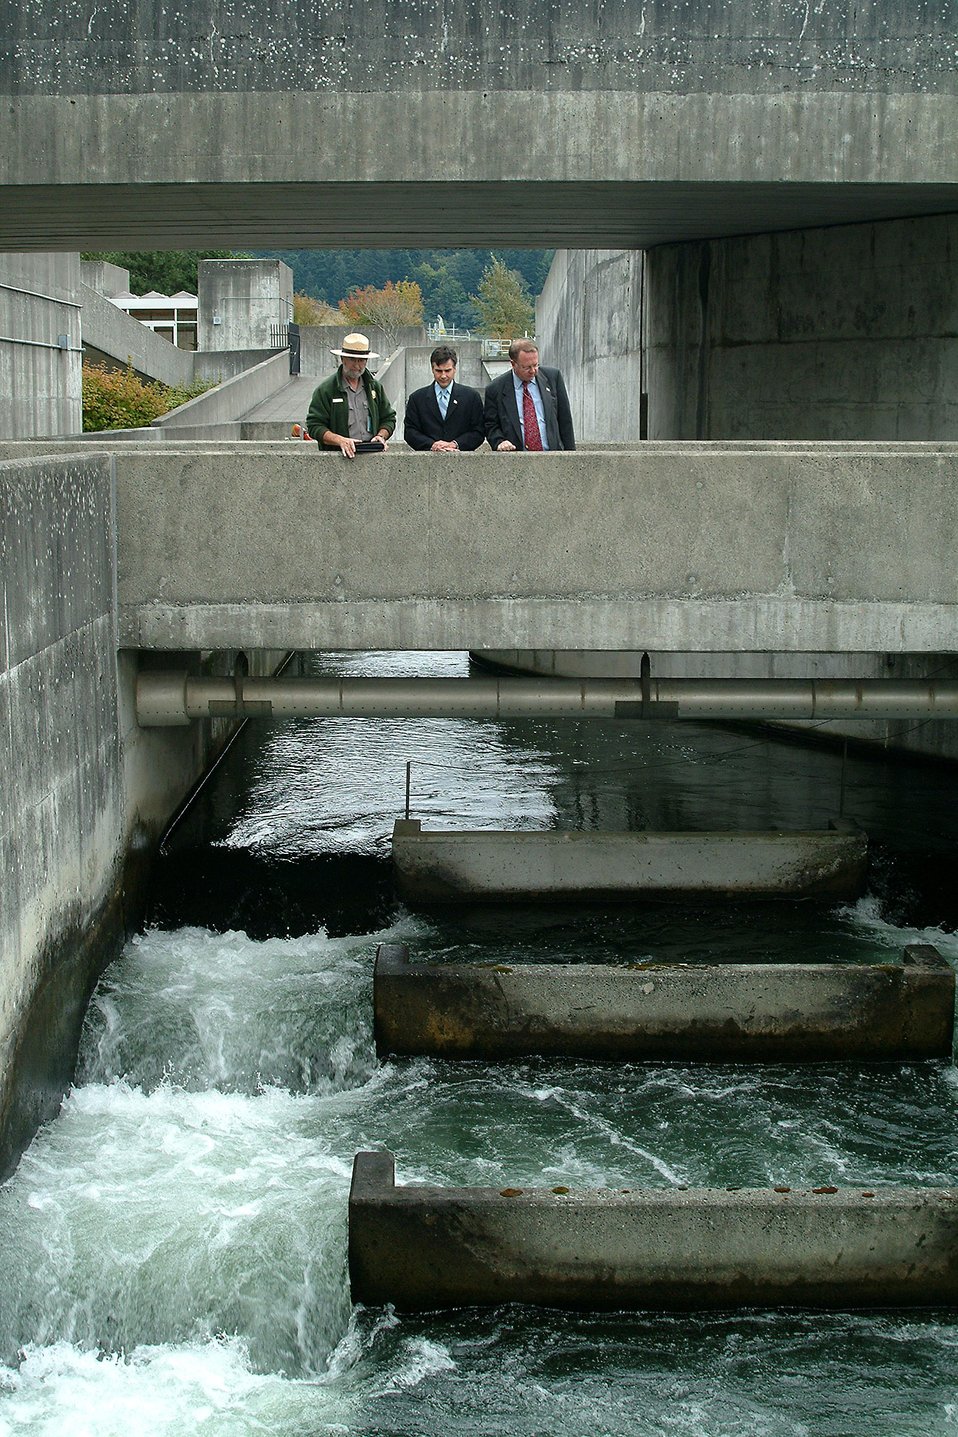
VIEWING THE FISH LADDER OF THE BONNEVILLE DAM FROM THE STATE OF WASHINGTON SIDE.

ARMY CORPS OF ENGINEERS RANGER BRIEFS ACTING ASSISTANT SECRETARY FOR POLICY AND INTERNATIONAL AFFAIRS VINCENT DEVITO AND ACTING DEPUTY ASSISTANT SECRETARY FOR POLICY ANALYSIS AL COBB ON DOE'S BONNEVILLE POWER ADMINISTRATION. THE BONNEVILLE DAM IS LOCATED ON THE COLOMBIA RIVER BETWEEN THE STATES OF WASHINGTON AND OREGON, EAST OF PORTLAND, OREGON.